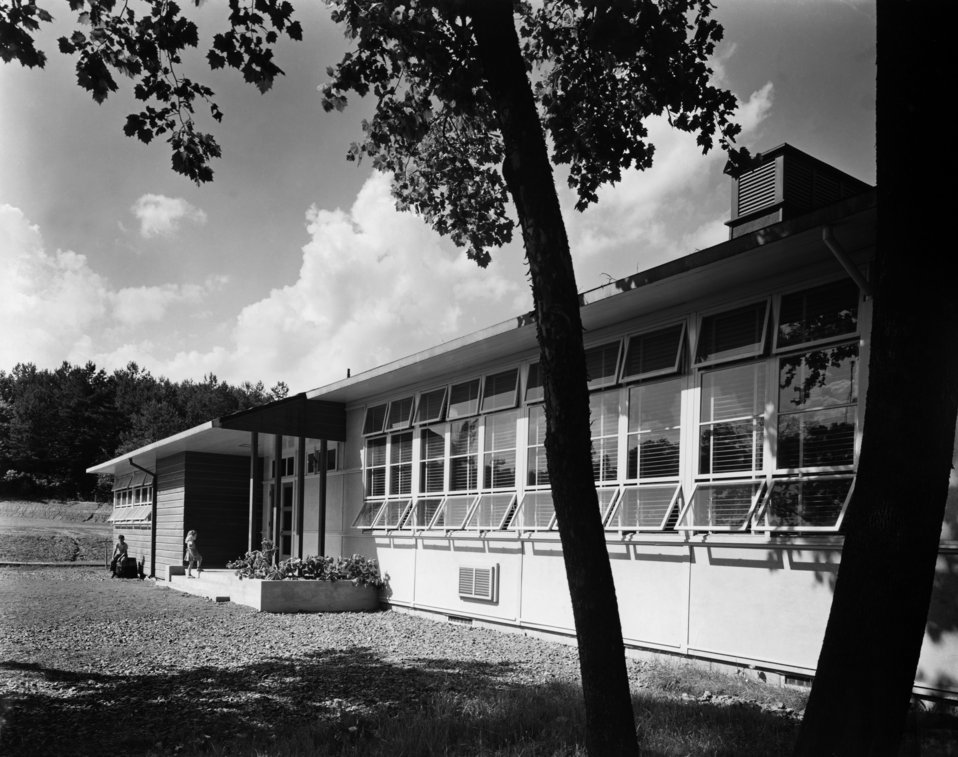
Clinton Engineering Works Elementry School Oak Ridge 1944

MED-158 DOE photo Ed Westcott 1944 Oak Ridge Tennessee